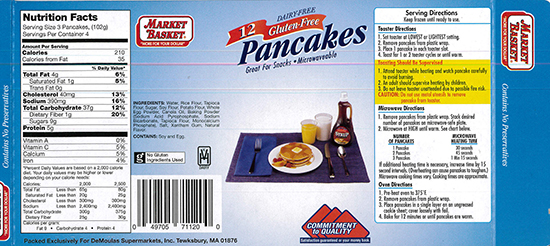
RECALLED – Product Description

May 19, 2014 – Product Recall – Middle East Bakery, Inc. Issues Allergy Alert on Undeclared Milk in Market Basket Dairy-free, Gluten-free Pancakes.